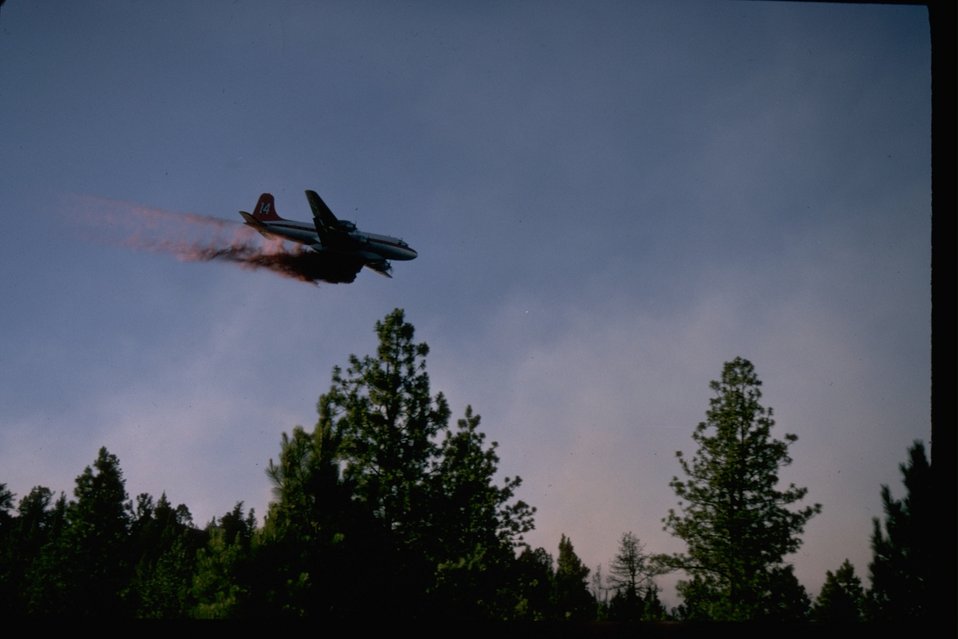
Retardant drop from airplane.